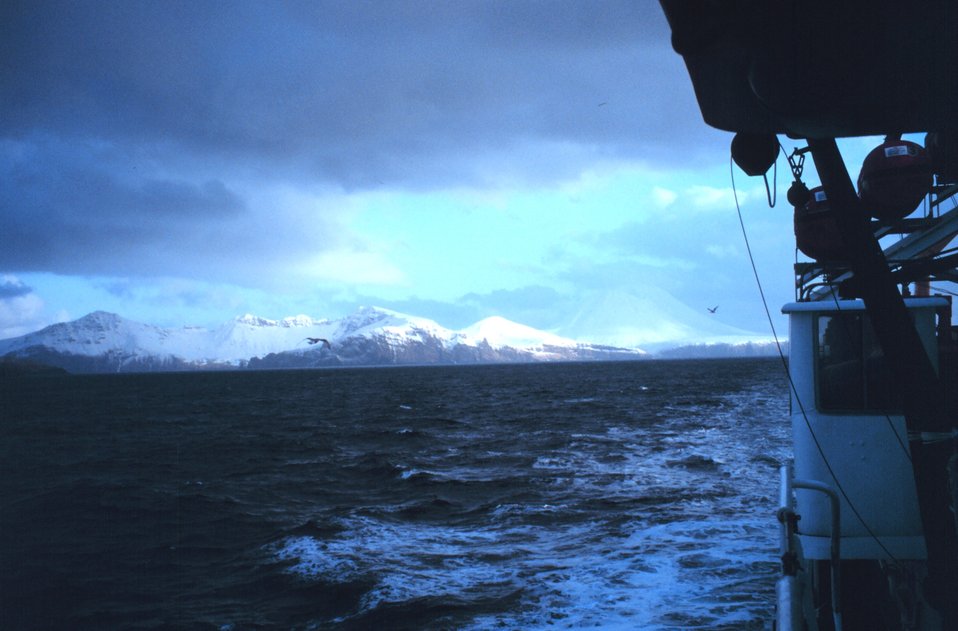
An Aleutian volcano and coastline